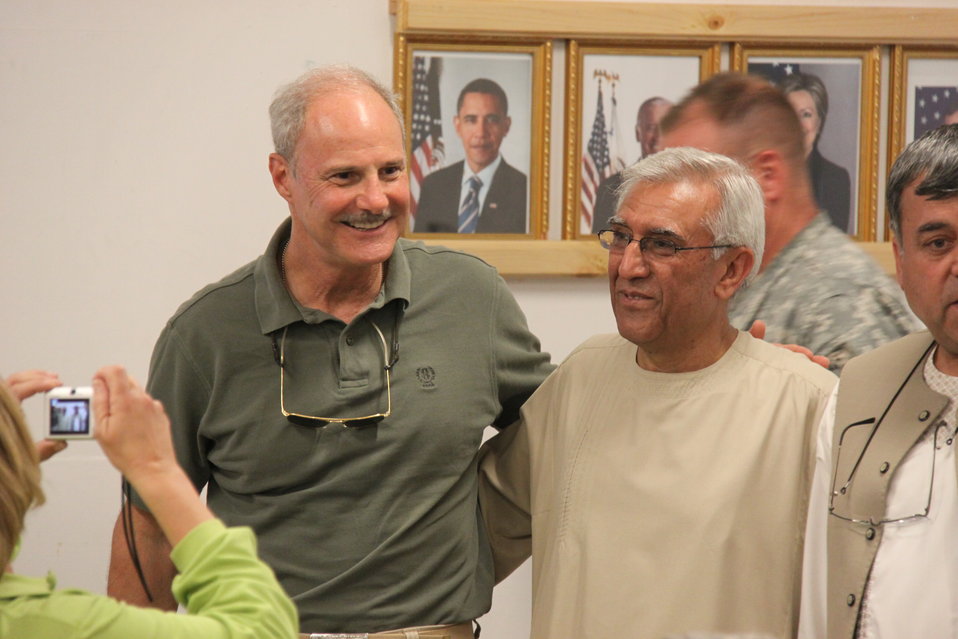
Meeting with Local Leaders in Kandahar